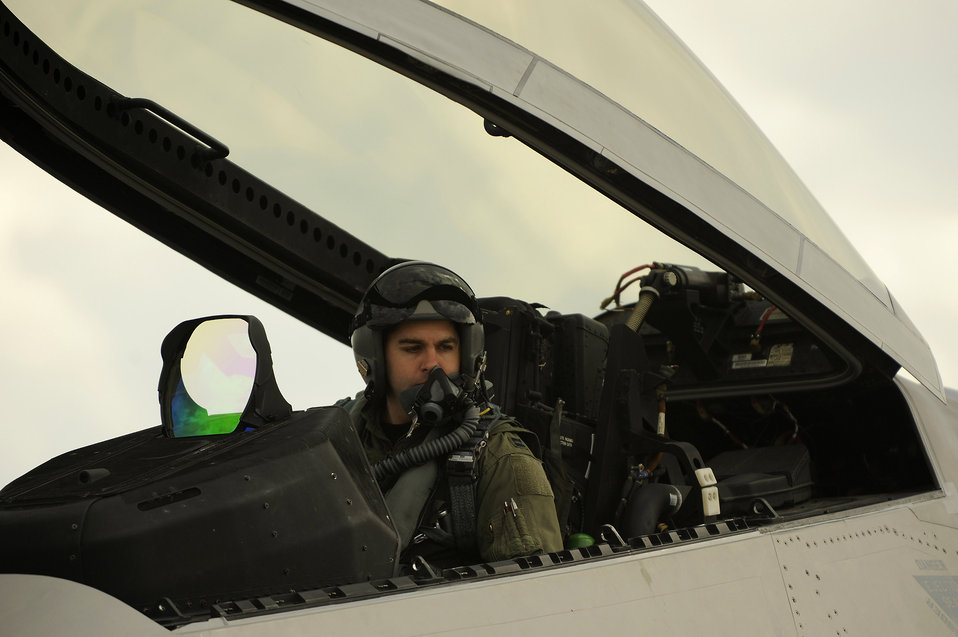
F-22s begin training in Japan

Capt. Jonathan Airhart prepares to start the engine while strapped in an F-22 Raptor prior to a mission Jan. 14 at Kadena Air Base, Japan. The F-22 is deployed from the 27th Fighter Squadron Langley Air Force Base, Va. in support of U.S. Pacific Command. Captain Airhart is a 27th FS pilot.